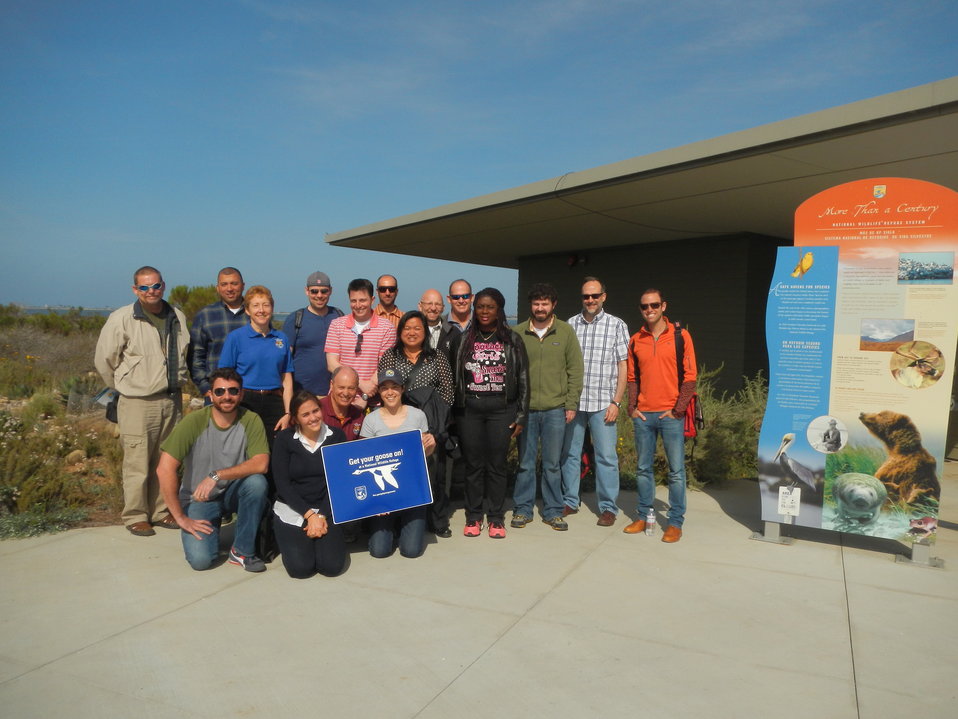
FWS Regional Transporation Coordinators Get Their Goose On

This photo shows FWS Regional Transportation Coordinators at their annual meeting, held at the San Diego NWR Complex office on the Sweetwater Marsh Unit of the San Diego Bay NWR in Chula Vista, CA.